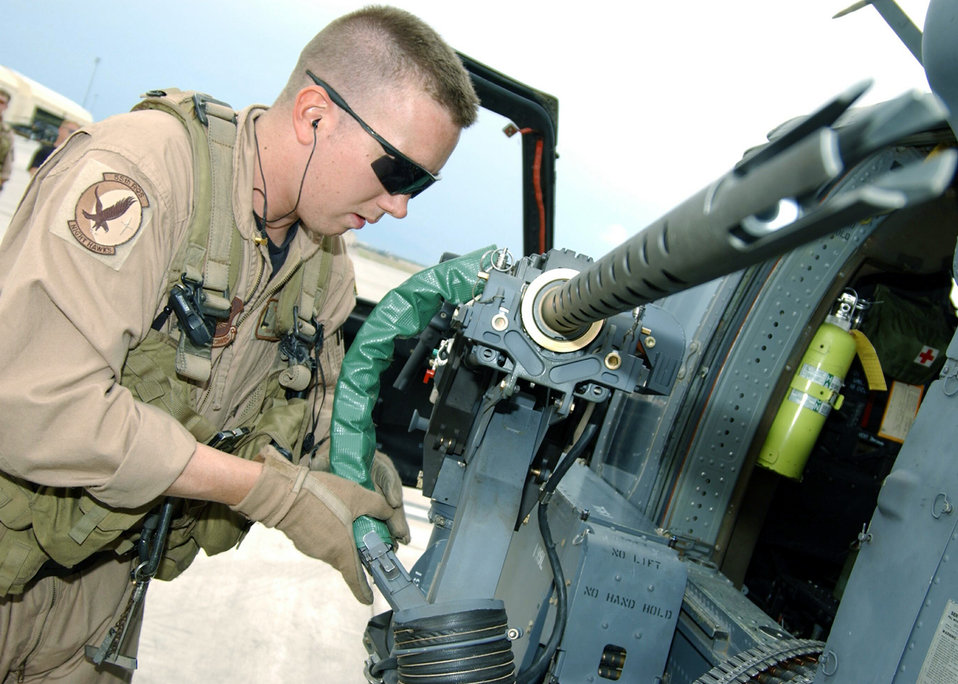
In a fix

DAVIS-MONTHAN AIR FORCE BASE, Ariz. -- Staff Sgt. Garry Gray calibrates the gun on an HH-60 Pave Hawk helicopter here Aug. 16 while preparing for a training mission. Sergeant Gray is an aerial gunner with the 55th Rescue Squadron.